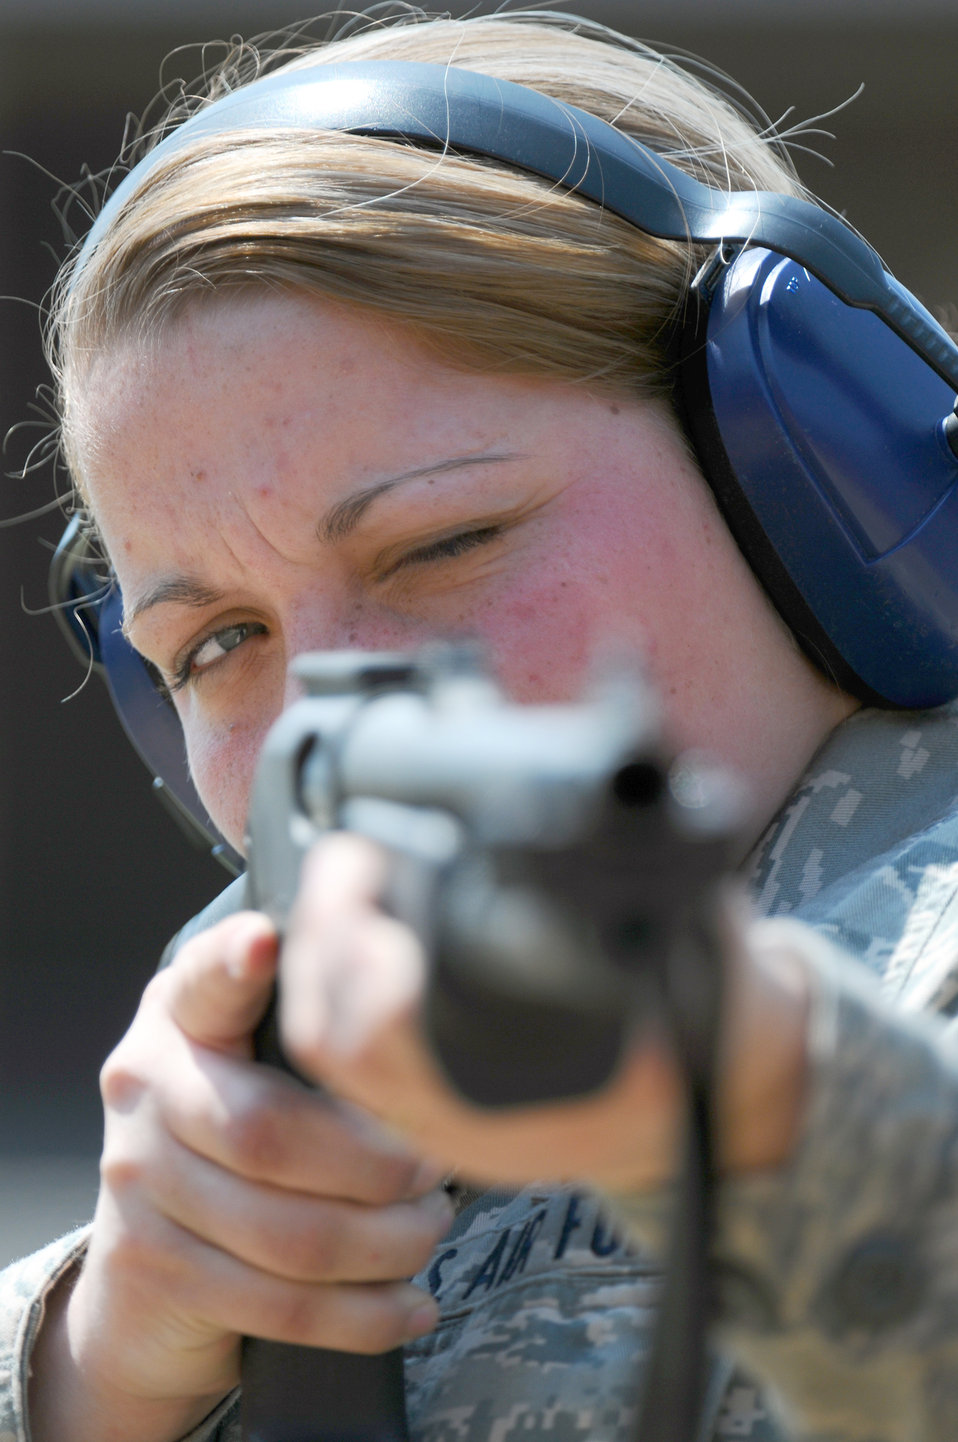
Bull's-eye

Airman 1st Class Chelsea Justice aims an M870 shotgun during weapons qualification April 3, 2011, at a firing range in Institute, West Virginia. Airman Justice is a member of the West Virginia Air National Guard's 130th Security Forces Squadron.